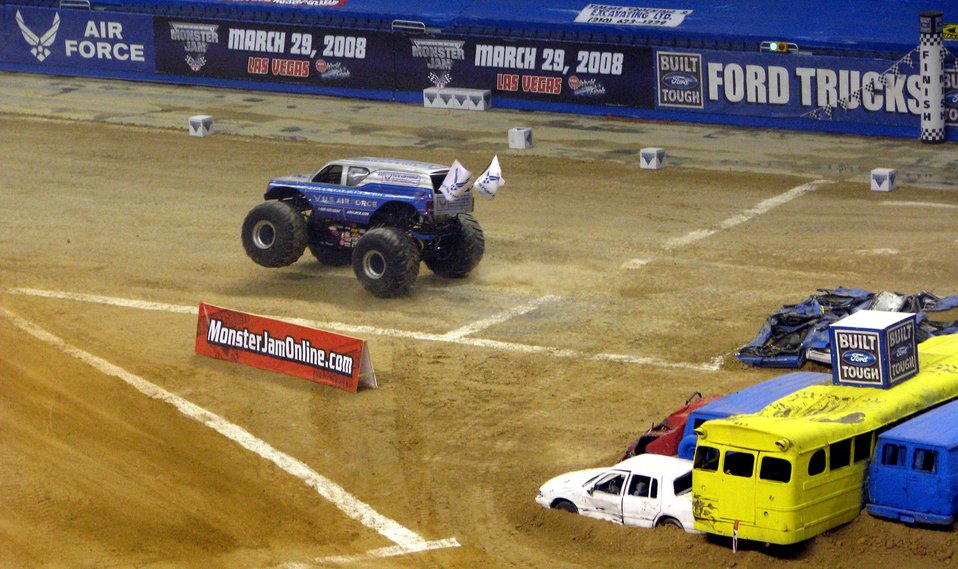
Afterburner steals the show

Afterburner, the Air Force's monster truck, dazzles the crowd Jan. 13 during the freestyle show at the 2008 San Antonio Monster Jam. Afterburner, an Air Force recruiting tool, is driven by Damon Bradshaw.